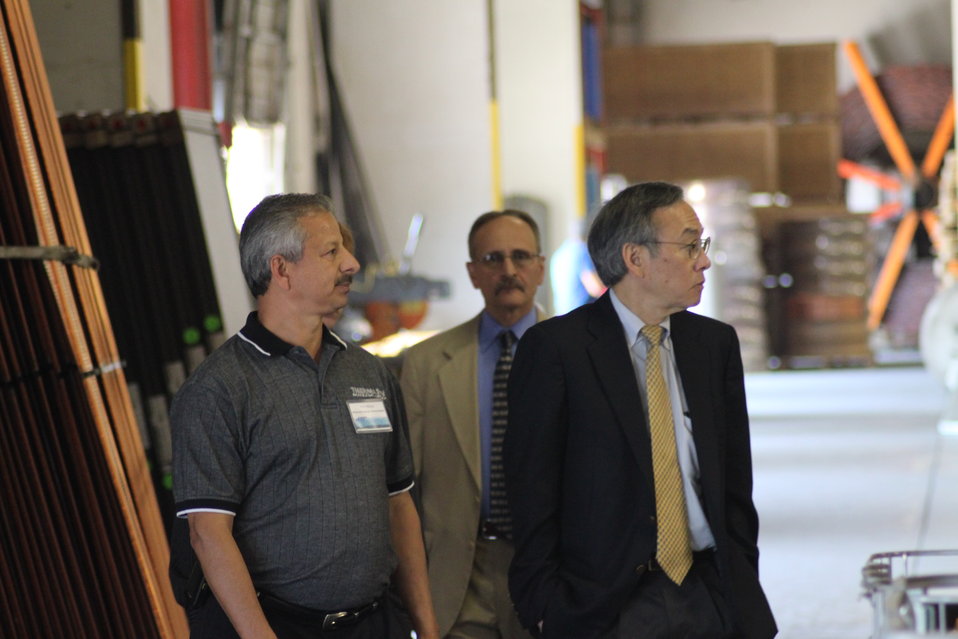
Norm 047